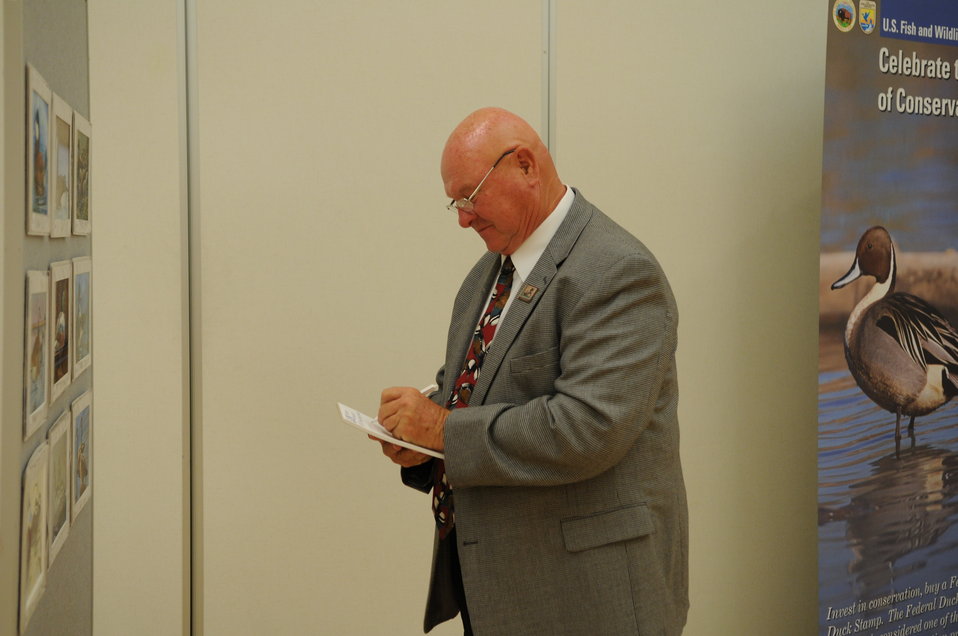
Judging

The U.S. Fish & Wildlife Service sponsored the 2012 Federal Duck Stamp Art Contest September 28 and 29 in Ogden, Utah, at Weber State University. A panel of five judges was responsible for choosing the art work used to design the 2013-2014 Migratory Bird Hunting and Conservation Stamp.